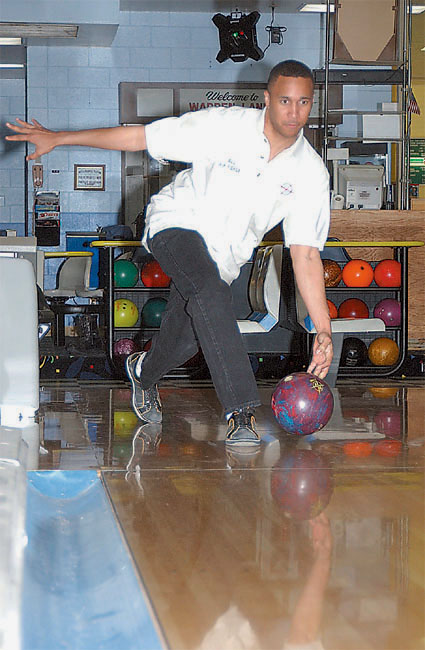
High roller

F.E. WARREN AIR FORCE BASE, Wyo. -- Second Lt. Rickie Banister, a 319th Missile Squadron missileer here, bowled over the competition overcoming a final day, 50-pin deficit and was crowned the best bowler in the U.S. Armed Forces at the Department of Defense tournament March 20 at Randolph Air Force Base, Texas.